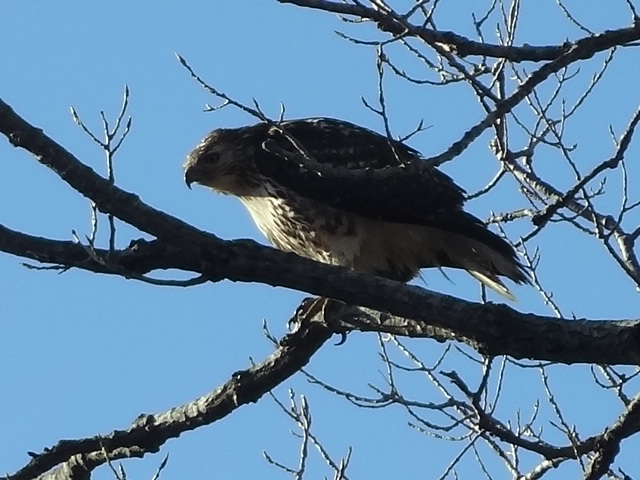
Immature Red-Tailed Hawk at Marais des Cygnes National Wildlife Refuge

This raptor was seen early in the morning at the refuge using his keen sense of sight and camouflage to hunt from above.